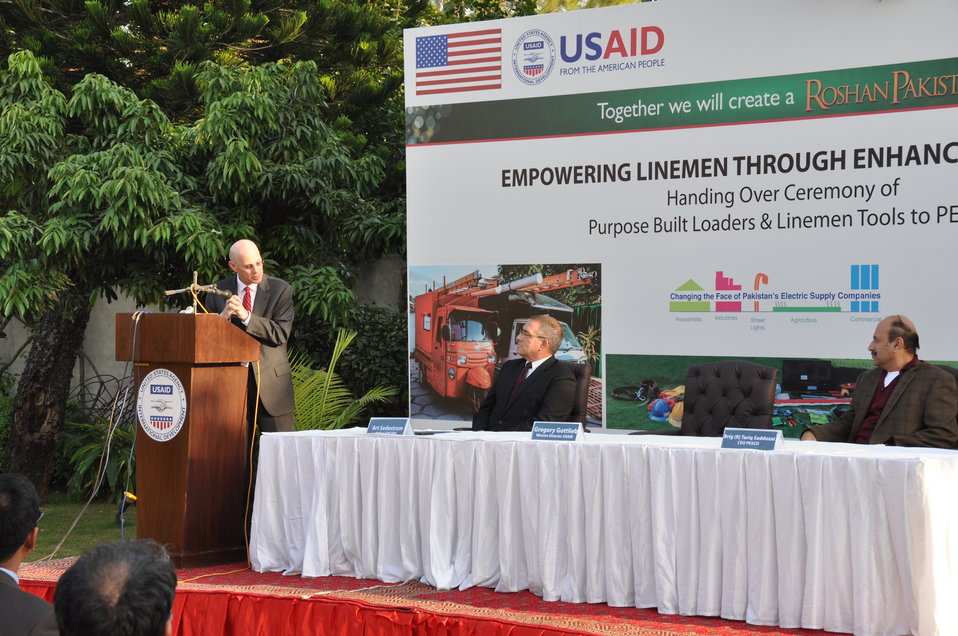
United States Government Strengthens PESCO Field Operations 12